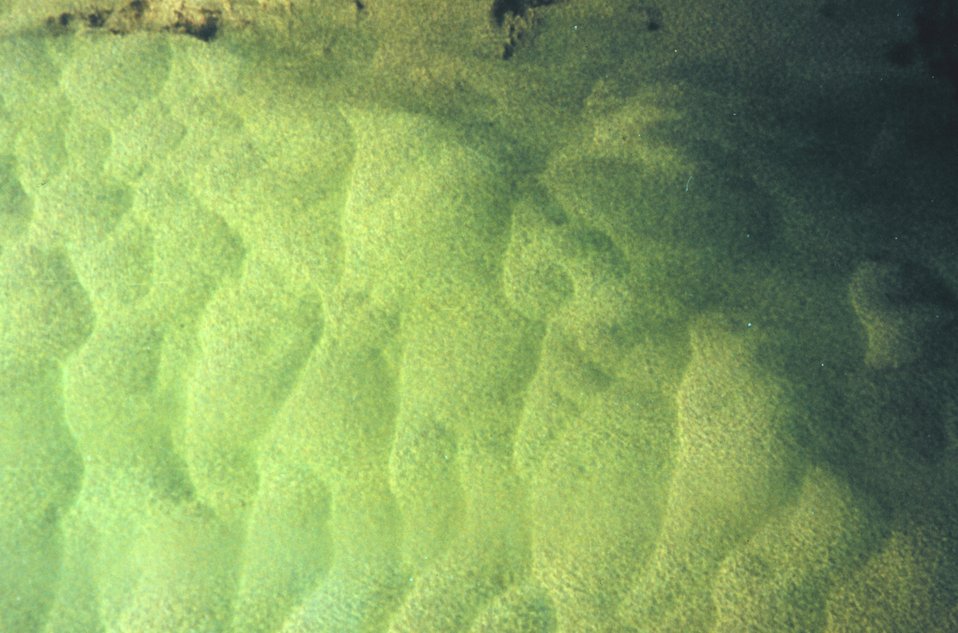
Giant sandwaves as seen from NOAA helicopter during SHOALS Lidar survey.